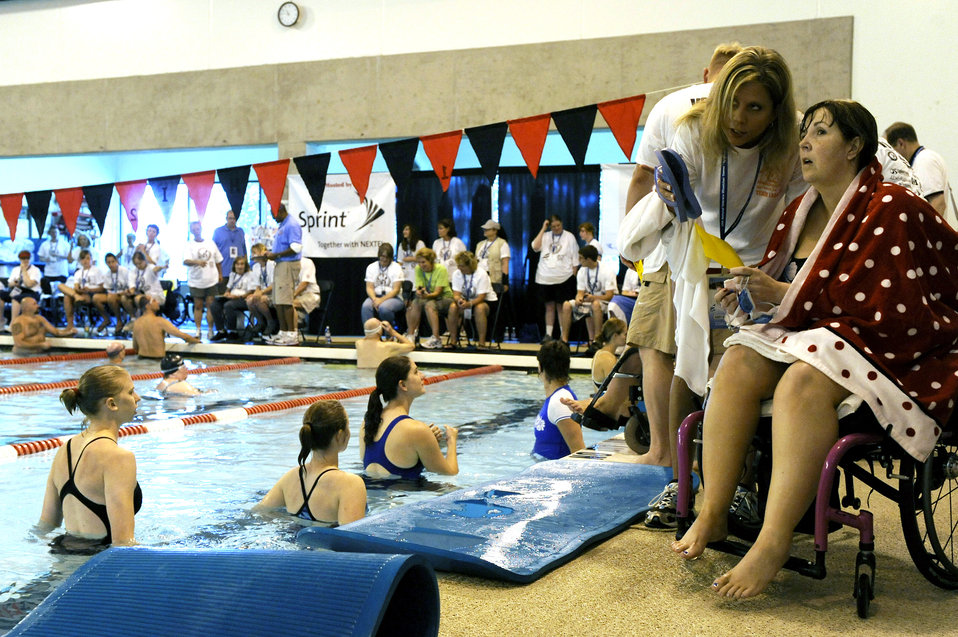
Former Airman competes in veterans Wheelchair Games

Terri Fuda and Amy Will look at the score board after Ms. Fuda completed her race in the swimming competition held at the Whitworth University swimming pool during the 29th National Veterans Wheelchair Games July 15 in Spokane, Wash. Ms. Fuda is an Air Force veteran from Gillespie, Ill. Ms. Will is a recreation therapist from St. Louis.